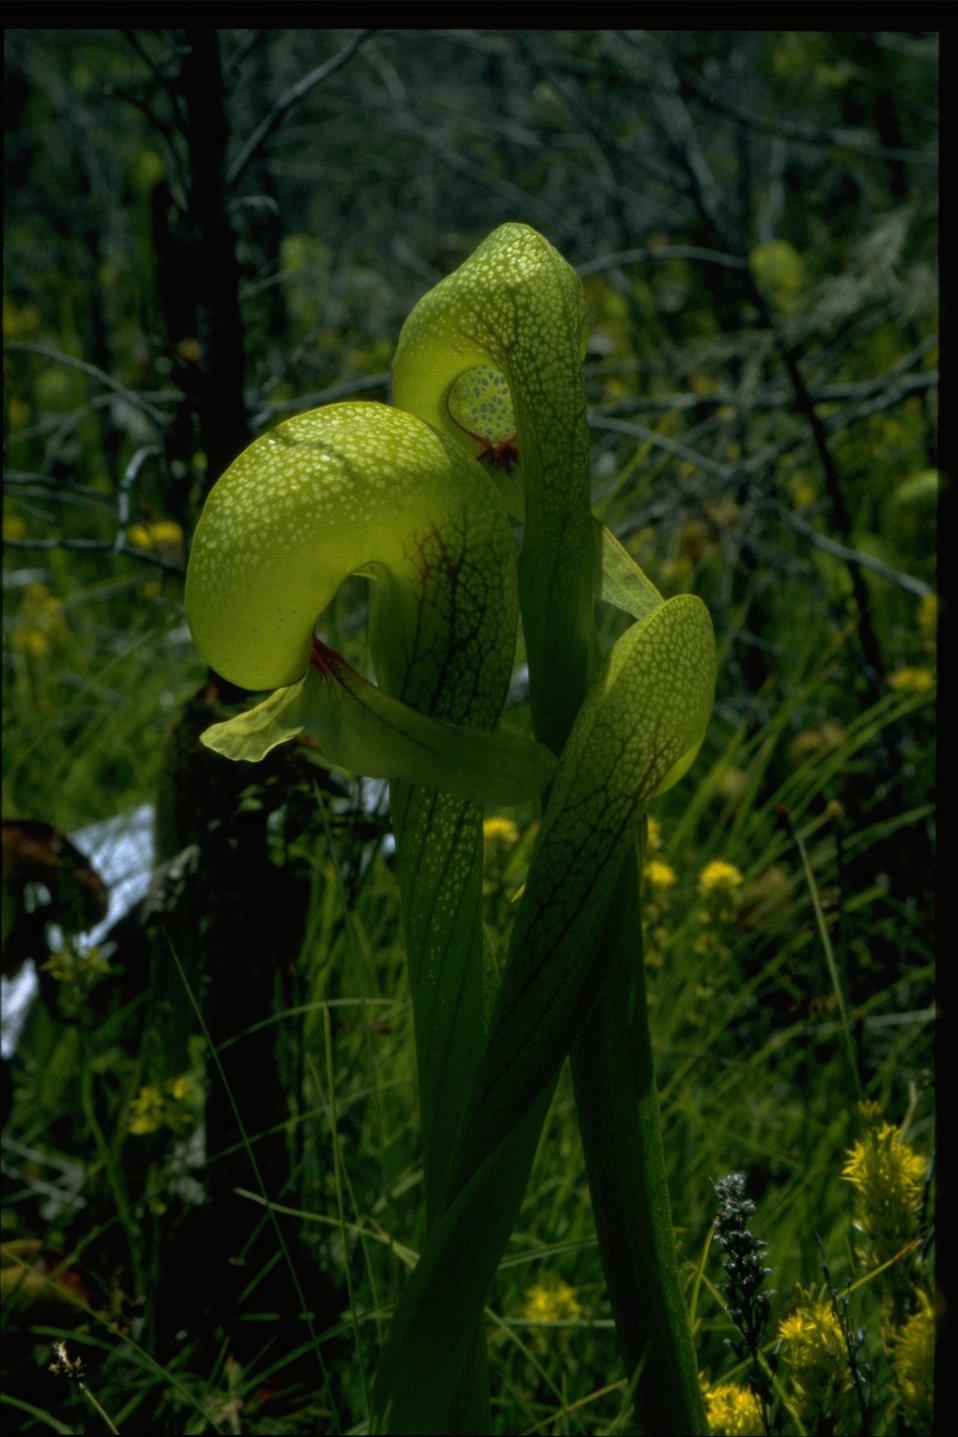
Closeup shot of Cobra Lily, Darlingtonia californica.